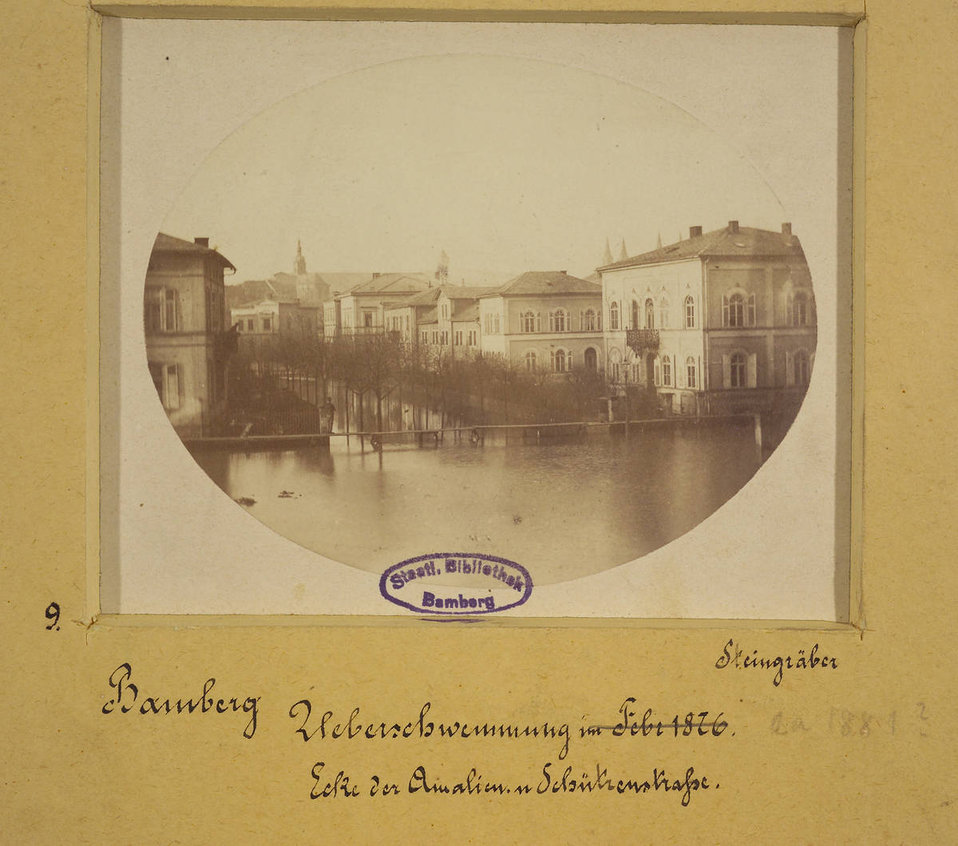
Template:Bamberg, Überschwemmung im Hainviertel Ecke Amalien- und Schützenstraße. Fotografie, 1876 oder 1889 (Staatsbibliothek Bamberg, MvO A V 32)